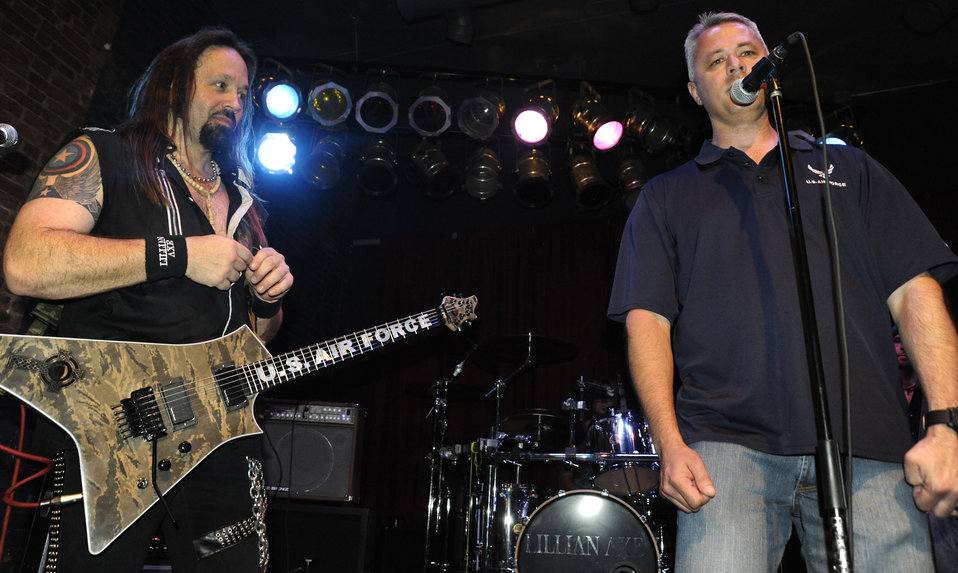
Air Force guitar made to honor fallen Airmen

Maj. Henry Cecil (right) talks to the audience about the background of why the Air Force guitar was built as Lillian Axe lead guitarist Steve Blaze looks on April 21, 2012, at the Riverside Warehouse in Shreveport, La. Cecil and Blaze collaborated with guitar maker John Guilford to build the guitar to honor nine Airmen who were killed April 27, 2010, at the Kabul International Airport in Afghanistan. After Lillian Axe tours with the guitar, it will be raffled off with the proceeds going toward the Air Advisor Memorial. Cecil is an Air Force representative to the Federal Aviation Administration in Fort Worth, Texas.